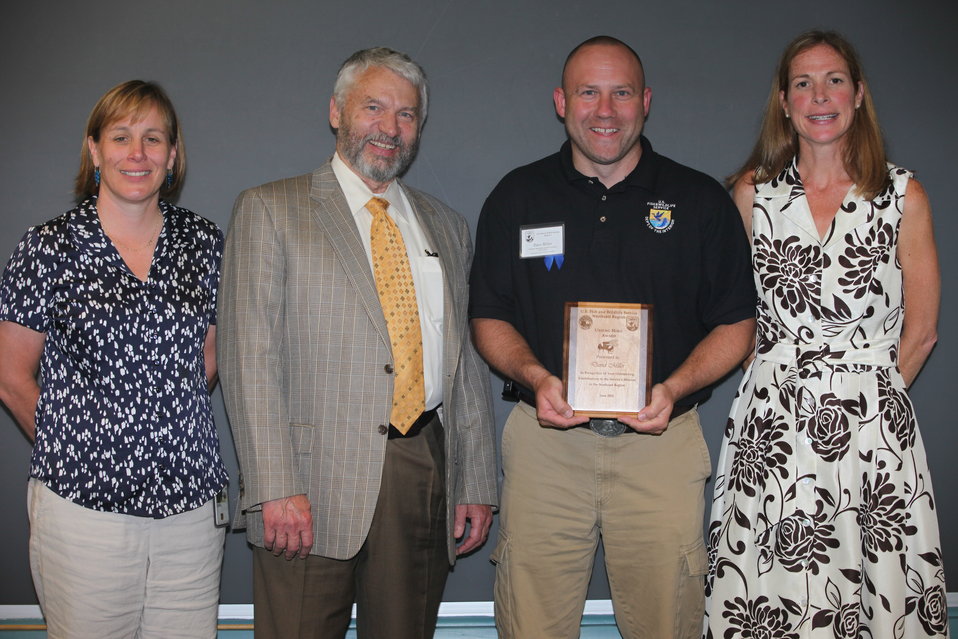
David Miller

David J. Miller of Great Swamp National Wildlife Refuge recieved a Region 5 Unsung Hero Award.
From left to right: Deputy Regional Director Deb Rocque, Deputy Director Rowan Gould, David J. Miller, and Regional Director Wendi Weber